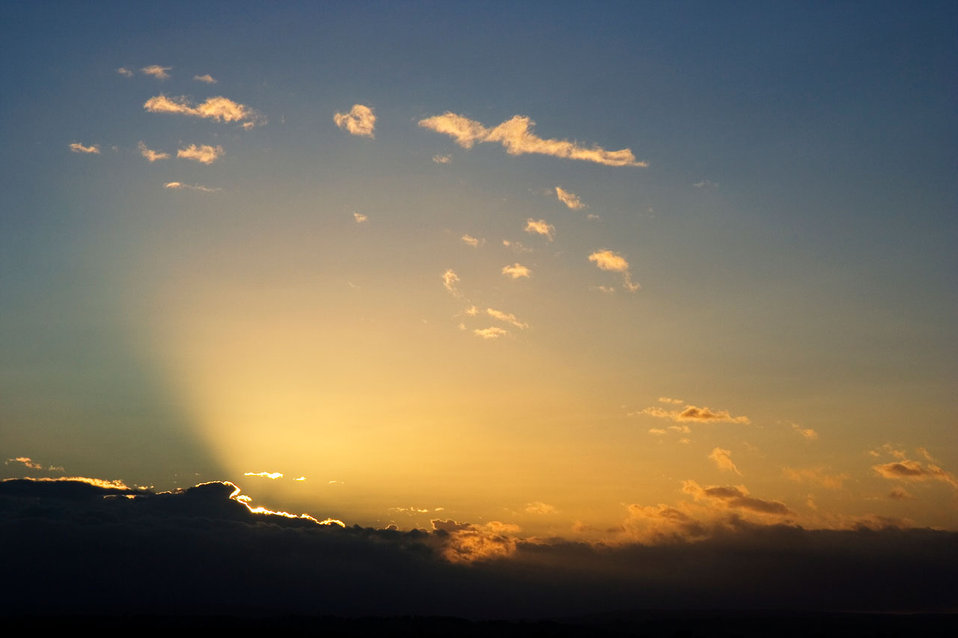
Sunset

Colourful sunset.